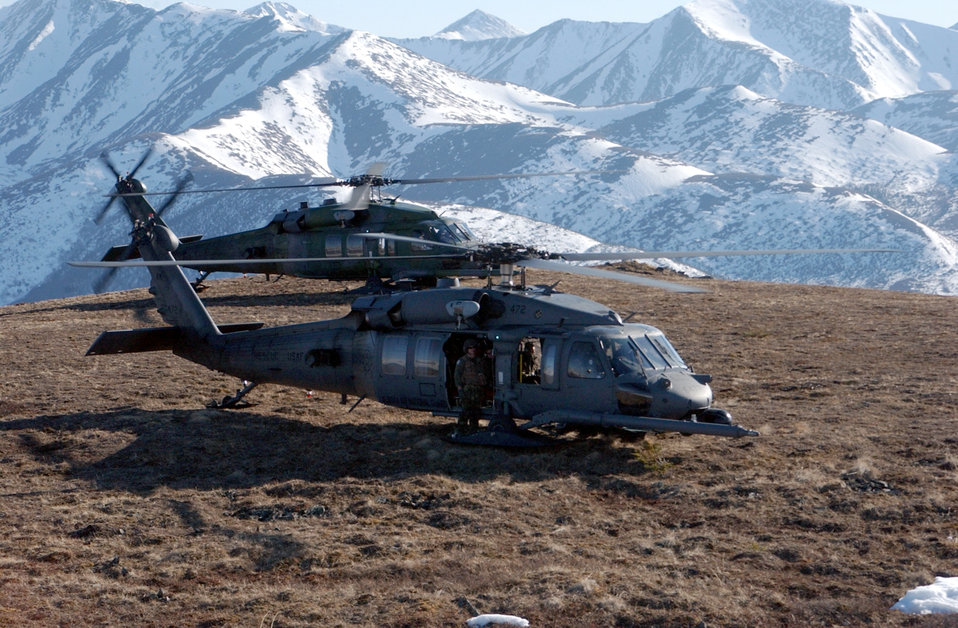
Cope Thunder training

WHITE MOUNTAINS, Alaska -- Two HH-60G Pave Hawk helicopters stand by for an airborne alert call during Exercise Cope Thunder here April 28. The annual exercise involves nine units and about 600 Airmen and 50 aircraft from Pacific Air Forces, Air Combat Command and the Alaska Air National Guard. The helicopters are assigned to the 210th Rescue Squadron's Detachment 1 at nearby Eielson Air Force Base.